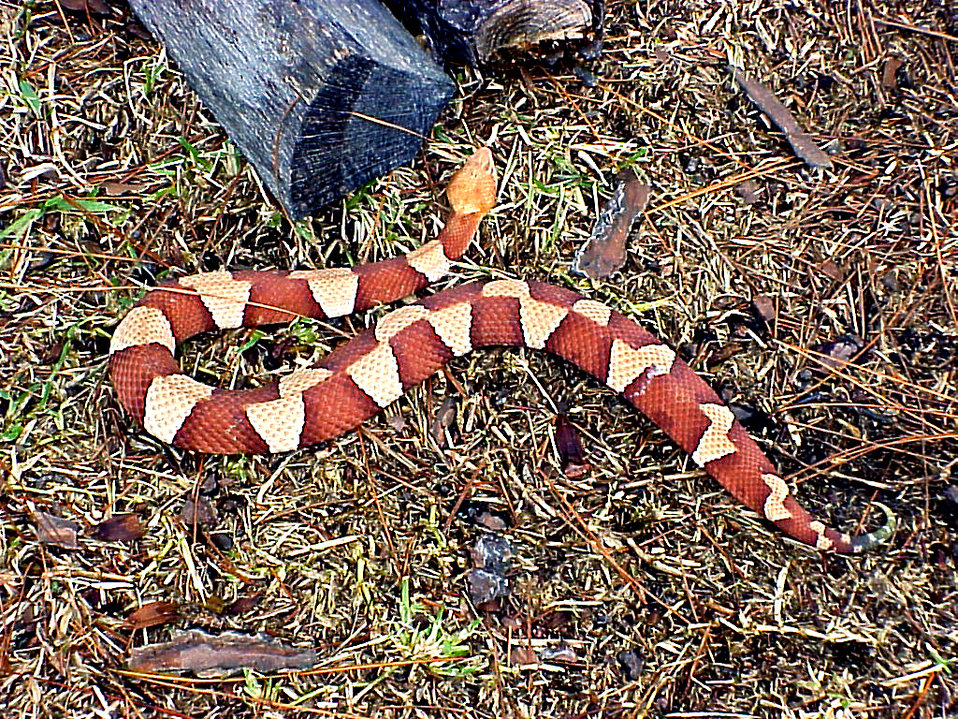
This 2005 image depicted a venomous 'broad banded' copperhead snake, Agkistrodon contortrix laticinctus, one of the most strikingly colorful copperhead subspecies.The broad banded copperhead is a southwestern subspecies that ranges throughout south-central Texas to the level of Victoria and Frio counties, northward through central Oklahoma up to the southern edge of Cowley County Kansas (Gloyd and Conant, 1990), placing it in hurricane-prone areas, which is of importance to those living in these regions, and first-responders offering aid to those affected by such a disaster. Unlike their northern cousins which are frequently found in association with rocks and talus slopes, the broad banded copperhead has a preference for areas with sandy soil that are covered with live oak trees and brush (Gloyd and Conant, 1990; Tenant, 1998). Within such regions, the underlying dead leaf litter provides nearly perfect camouflage for the snake's sharply contrasting pattern and coloration.